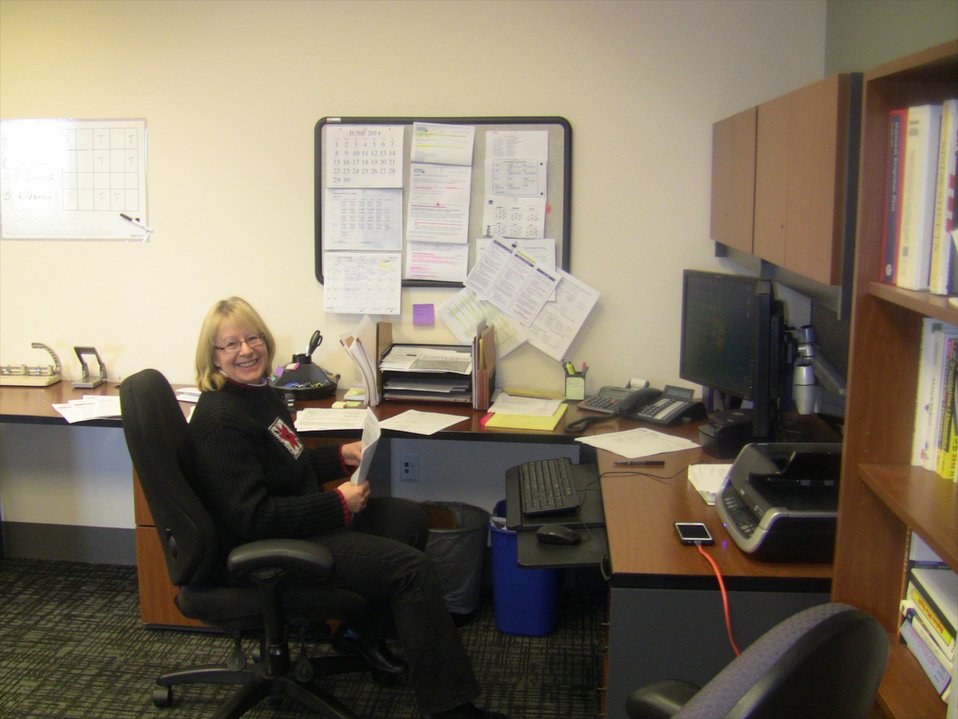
Holly Arnett working; Location: National Archives at Denver, Broomfield, CO